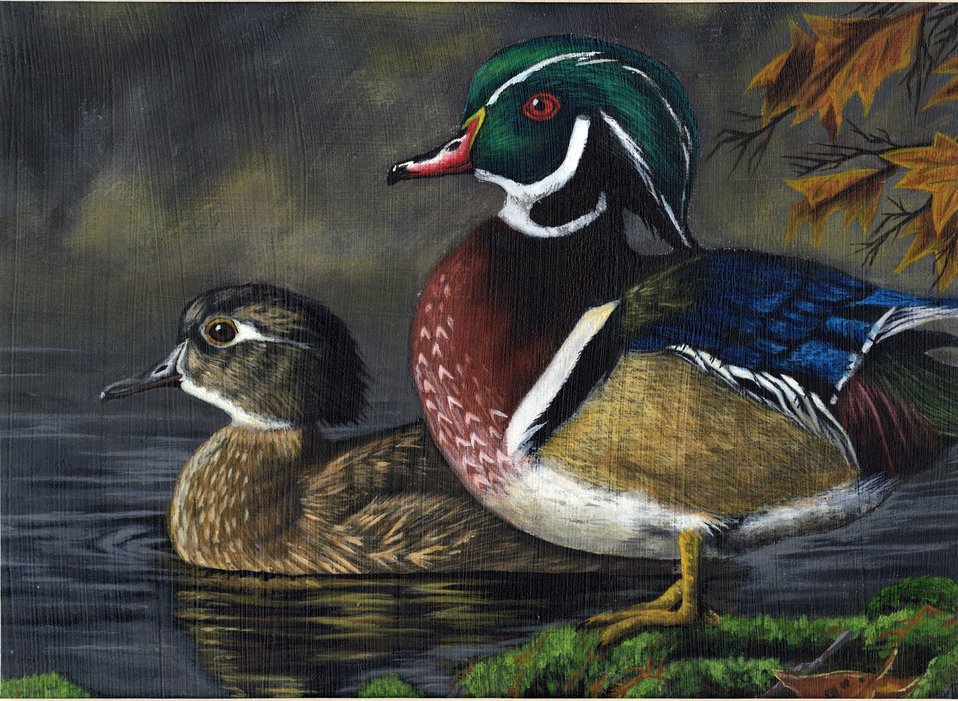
Oklahoma

2012 Jr Duck Stamp Program
State Best of Show
Oklahoma